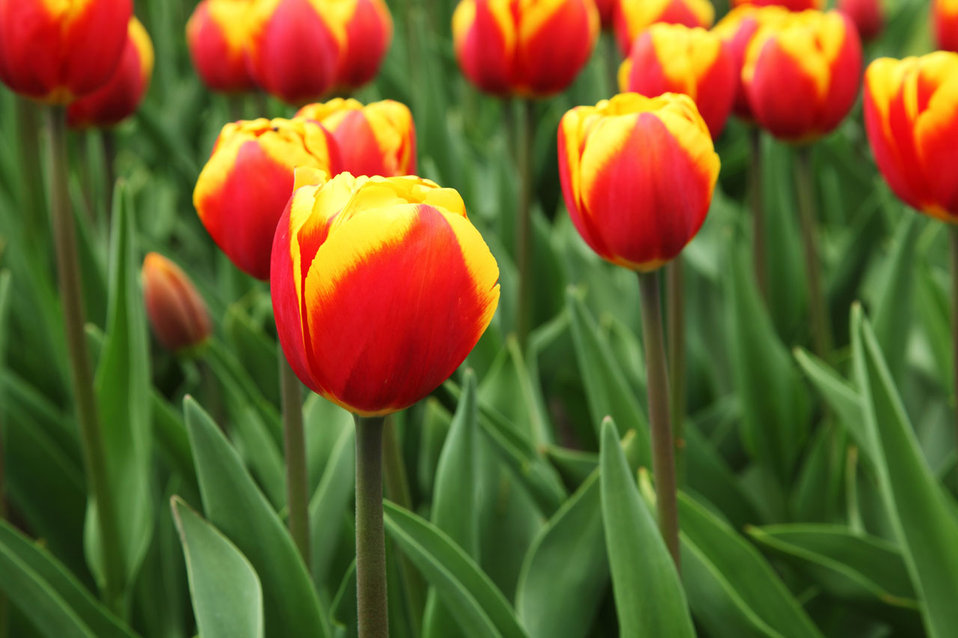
Red and yellow tulips

Red and yellow tulip background.